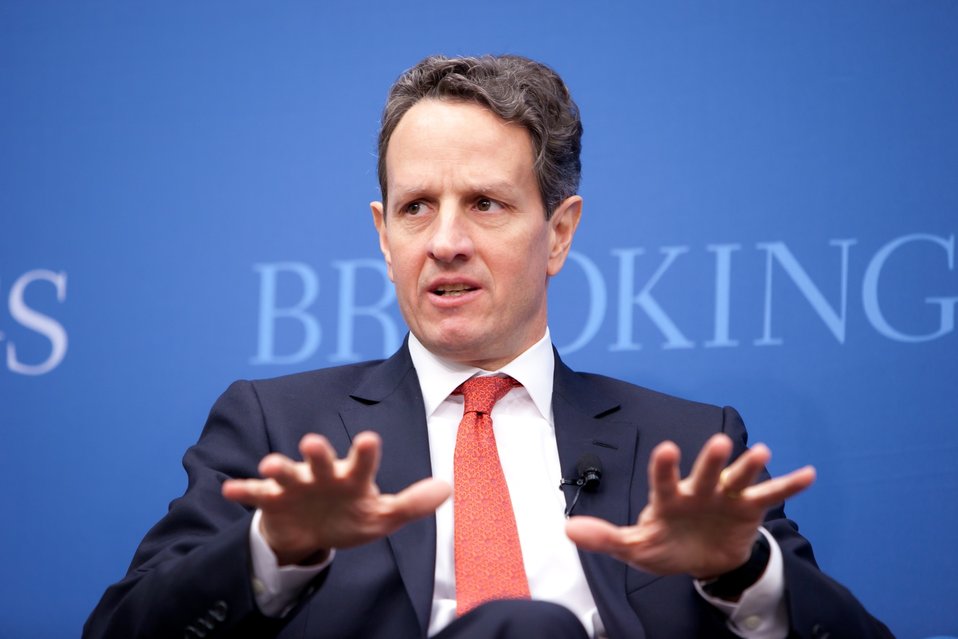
Secretary Geithner at the Brookings Institution, 02/11/2011

To announce the Obama Administration's report on reforming our nation's housing finance market, including Fannie Mae and Freddie Mac, Secretary Geithner participated in a question and answer session at the Brookings Institution’s forum on “Restructuring the U.S. Residential Mortgage Market.”